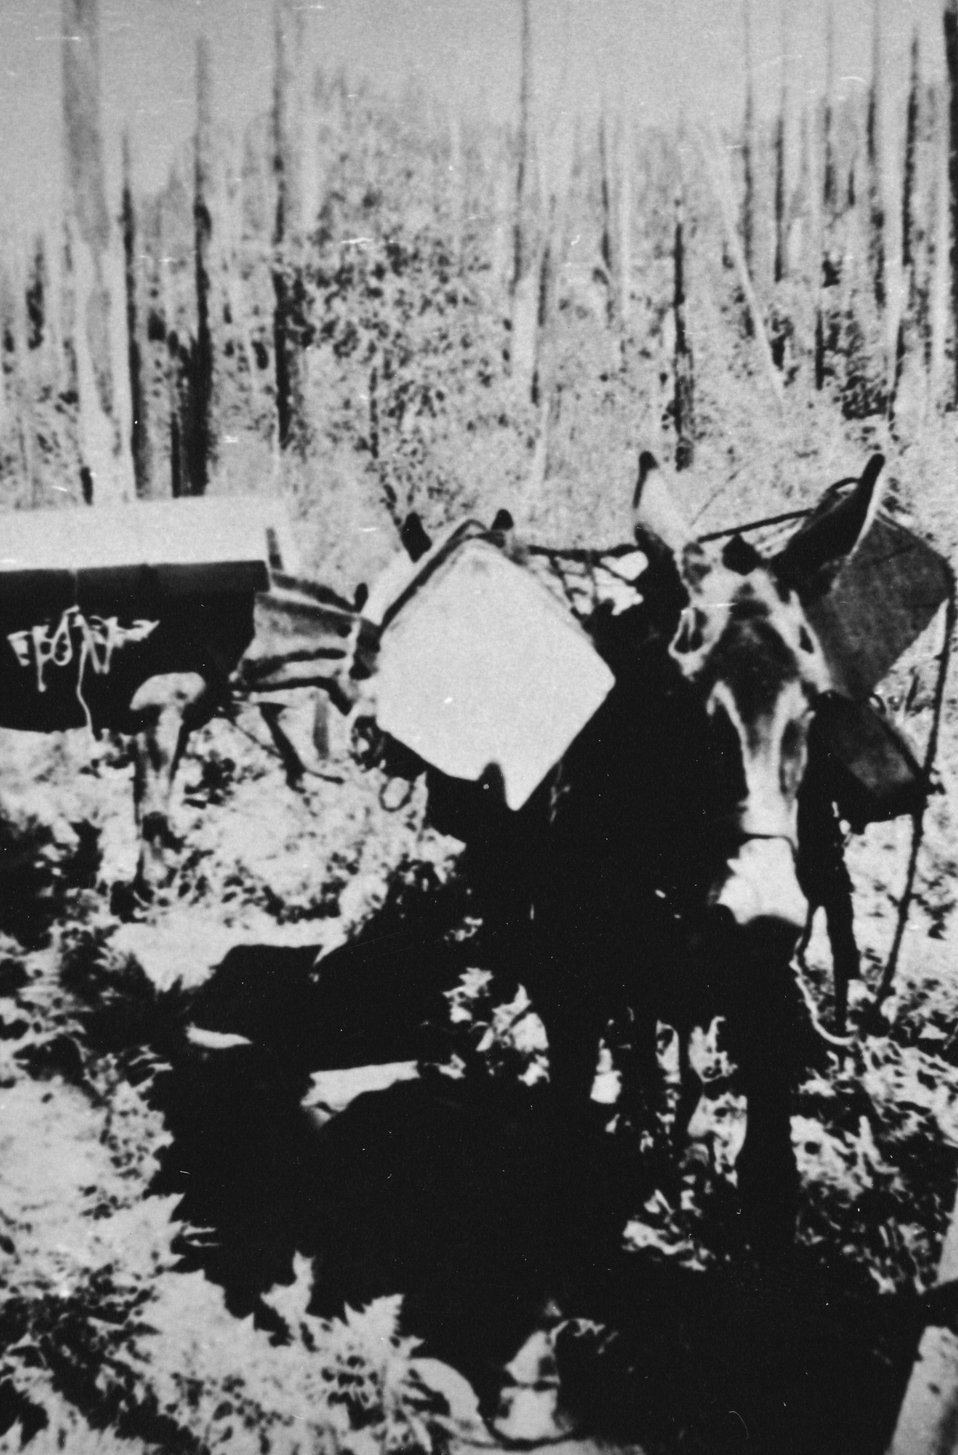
Pack mule in Rogue River Canyon.